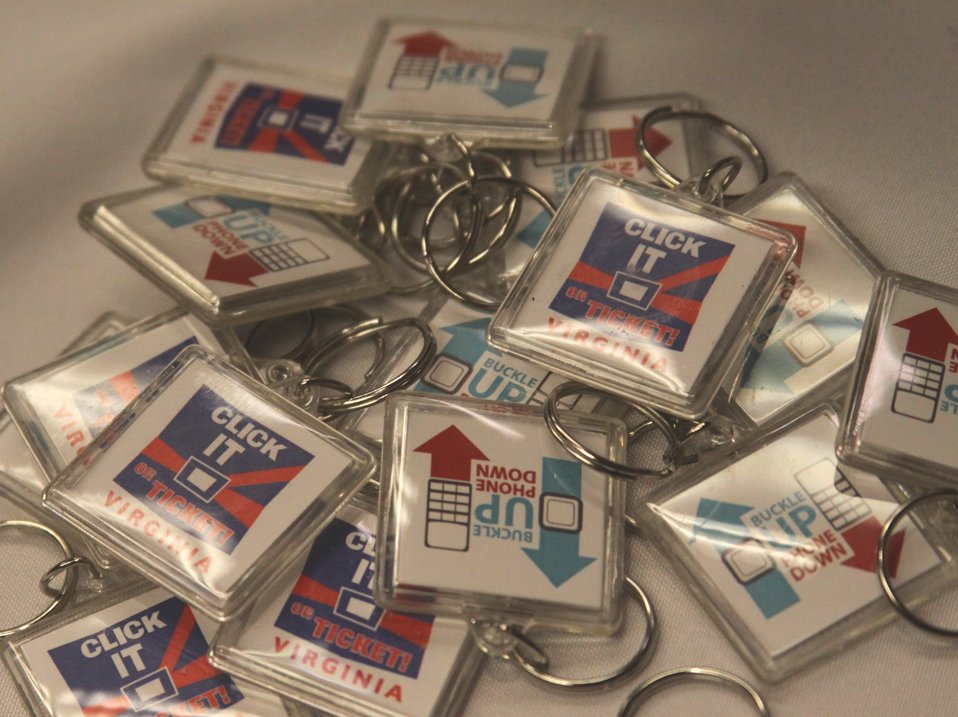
Distracted Driving Technology Showcase April 19, 2013